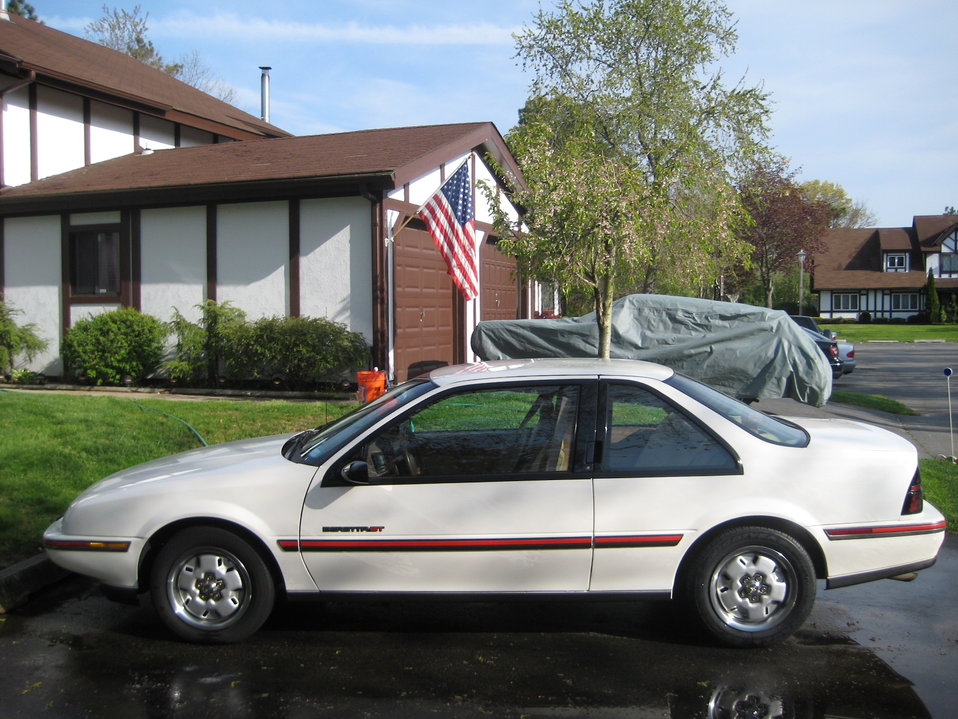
1989 Chevrolet Beretta GT
Robert Spinello, my photo and vehicle